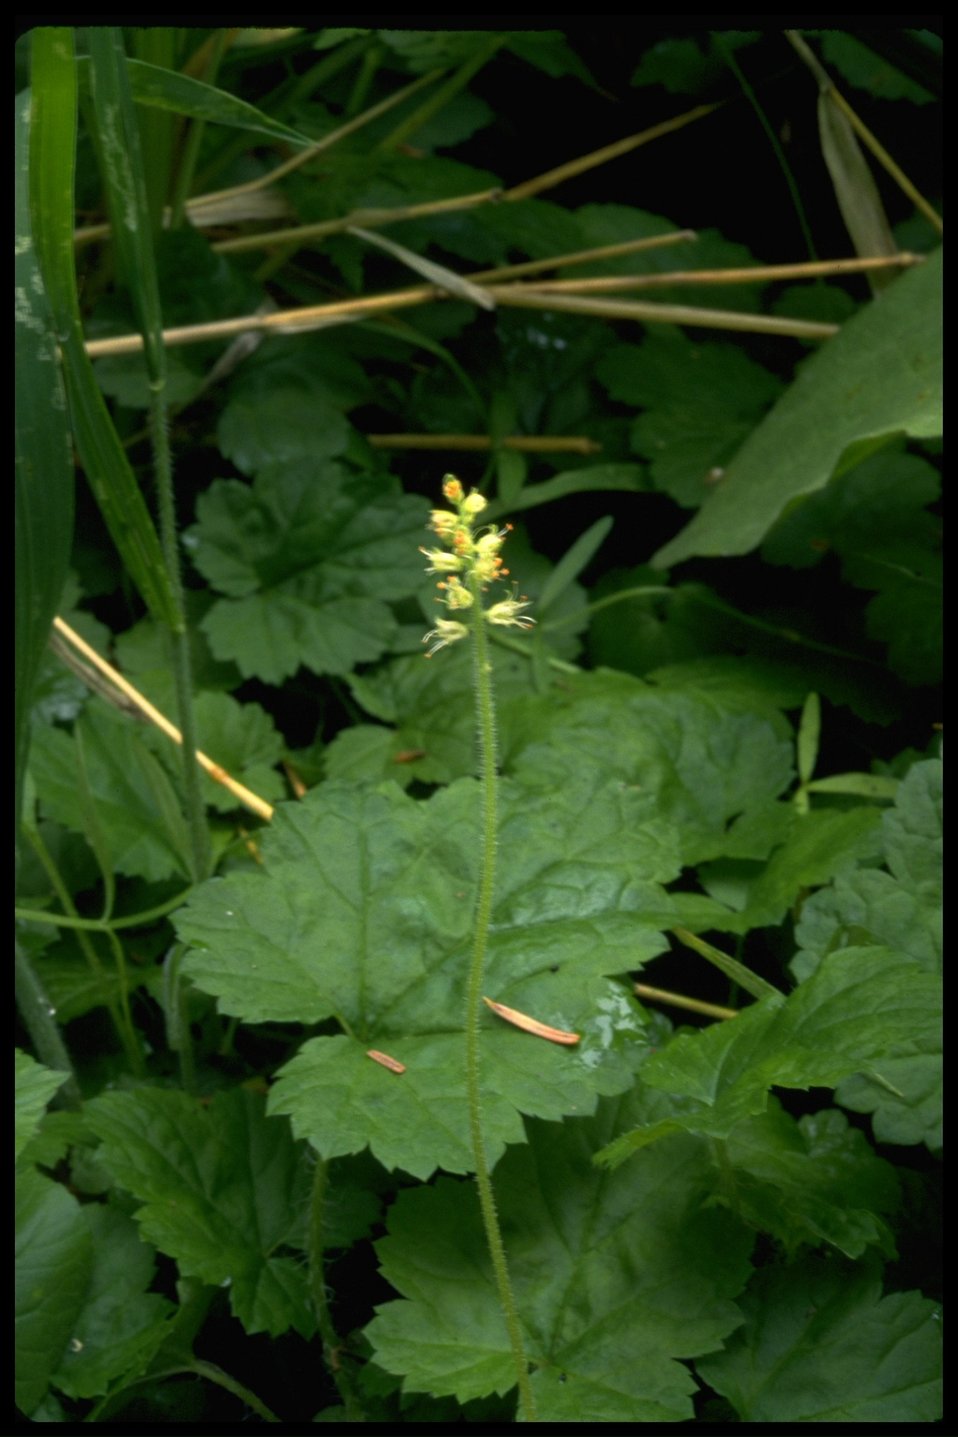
Bensoniella oregana, commonly known as Bensoniella.